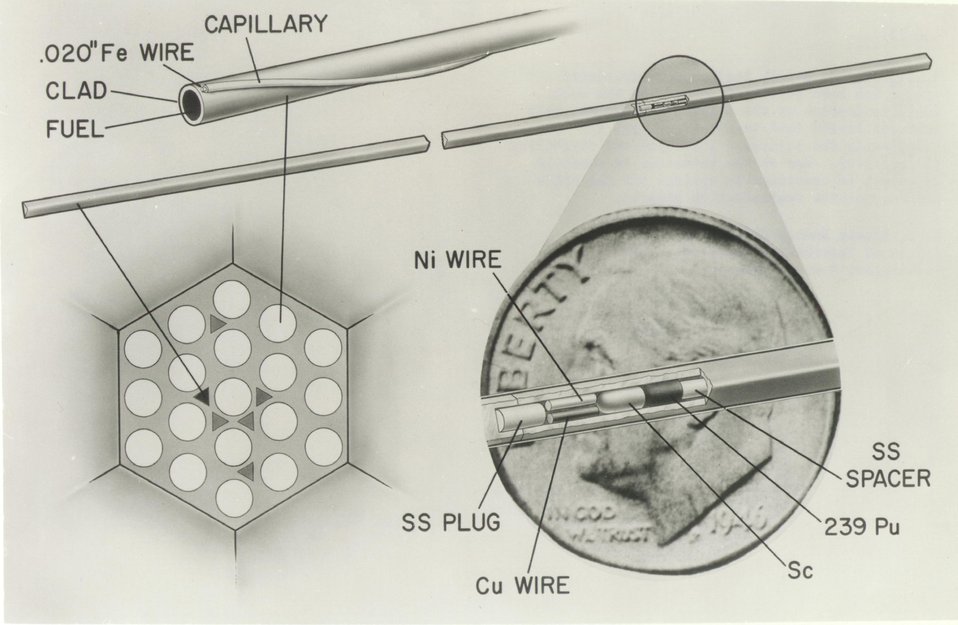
A miniaturized 1/4-inch long neutron dosimeter system has been developed to provide the best characterization of the neutron environment ever achieved during fuel irradiation tests for calculating the estimated life span and durability of fuel pins. Use of the technique is expected to result in considerable savings for the AEC's breeder reactor demonstration program. c. 1973